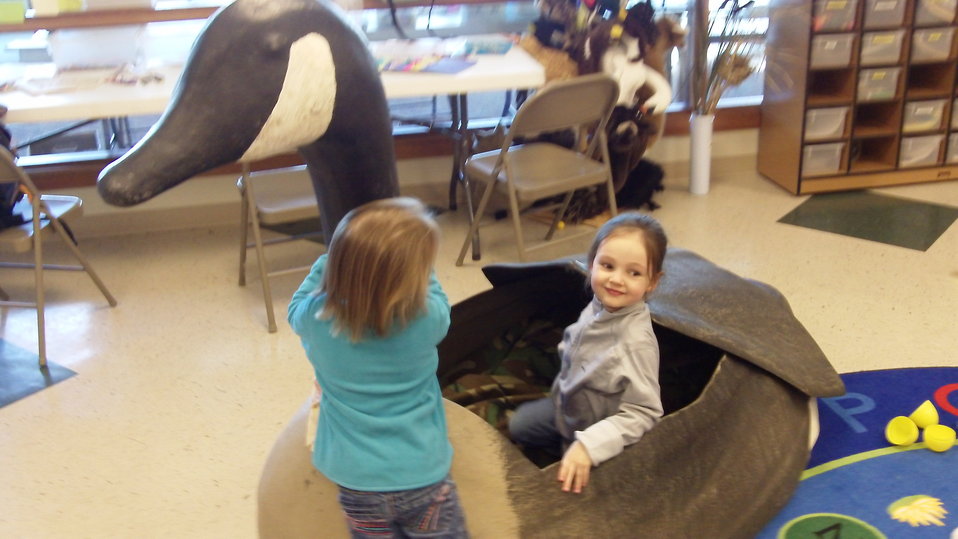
Kinder Korner

Volunteer and Craft Leader Caroline and friend playing in our kinder korner at Bear River Migratory Bird Refuge.